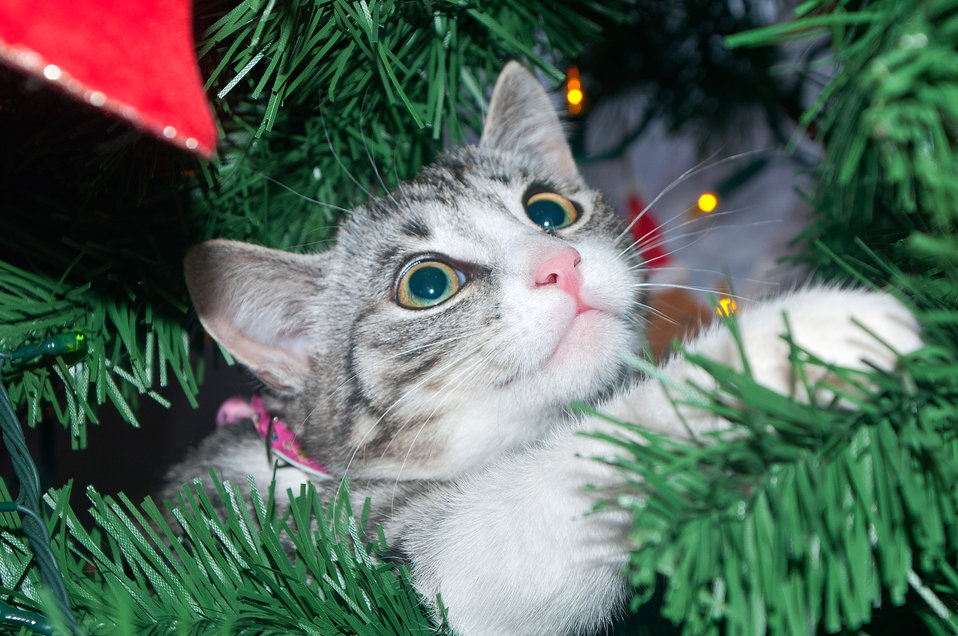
Cat on the tree 1

Fun cat on the tree.